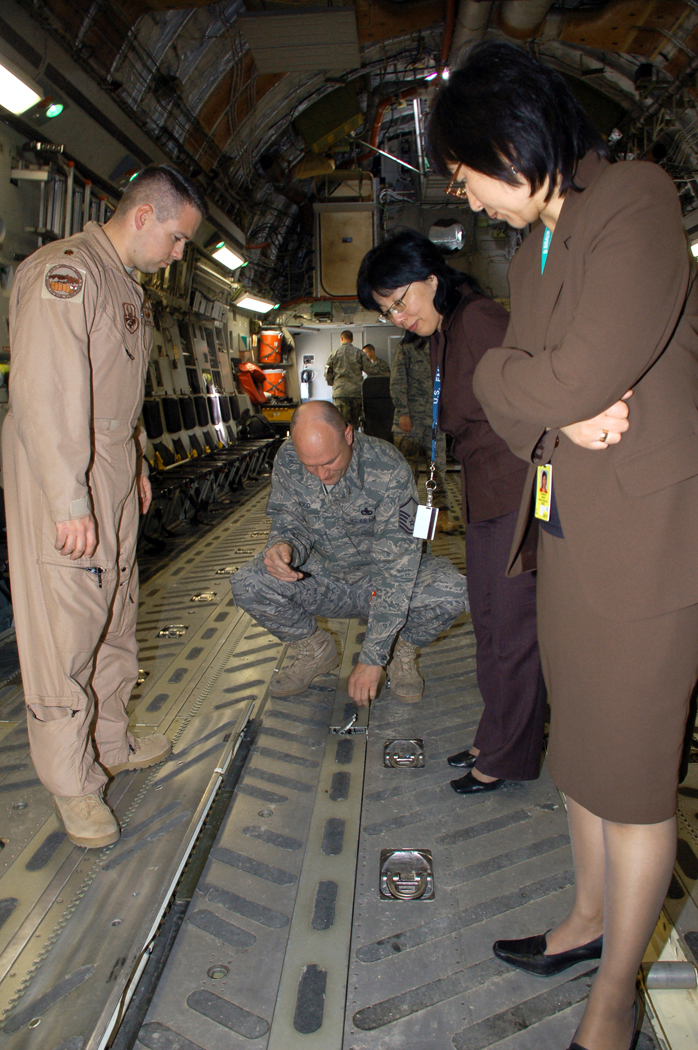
Med group holds symposium for Kyrgyz, Peace Corps, Embassy docs

Maj. Glenn Donnelly (left) and Master Sgt. Edward Hood demonstrate to attendees of the recent 376th Expeditionary Medical Group's coalition medical symposium at Manas Air Base, Kyrgyzstan, how to configure the cargo bay of a C-17 Globemaster III to upload different types of palletized cargo. Guests attending the symposium were from the Spanish coalition medical staff, U.S. Embassy medical unit, Peace Corps medical staff and the Bishkek Research Center of Trauma and Orthopedics. Major Donnelly is deployed from Barksdale Air Force Base, La. Sergeant Hood is deployed from Travis AFB, Calif.